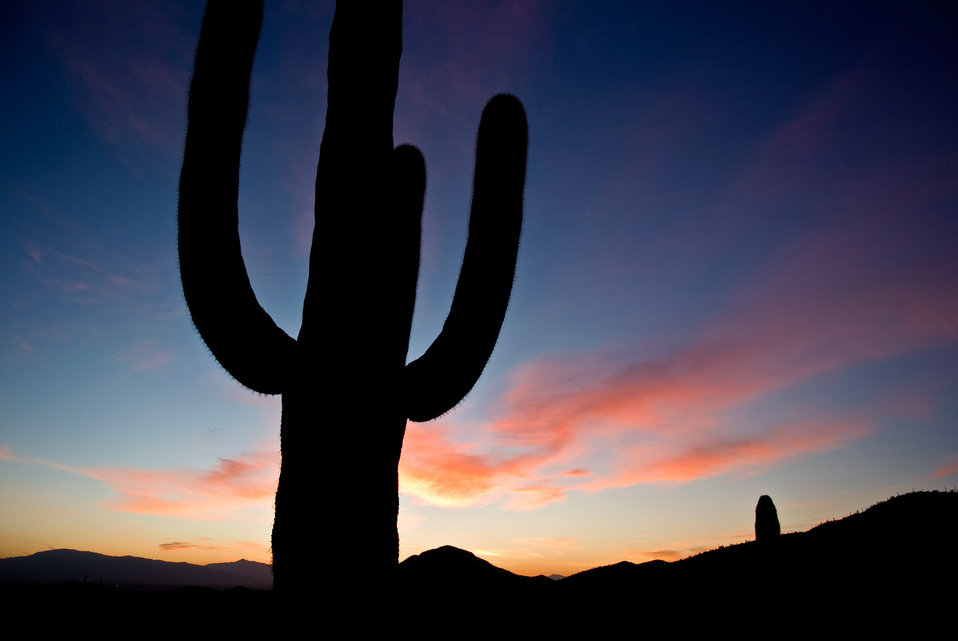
Arizona sunrise.